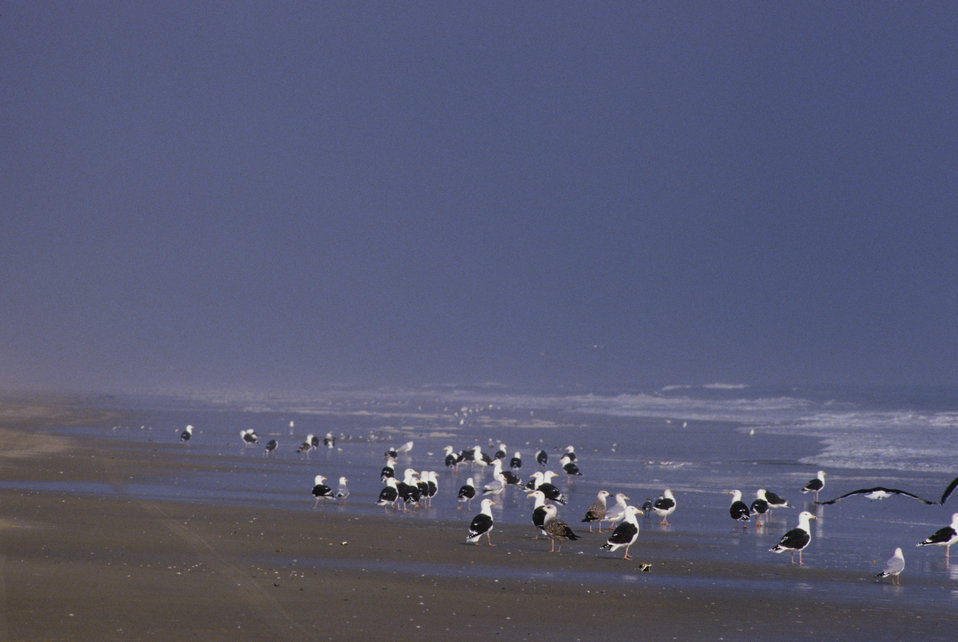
Black-backed gulls at shoreline

Back Bay National Wildlife Refuge